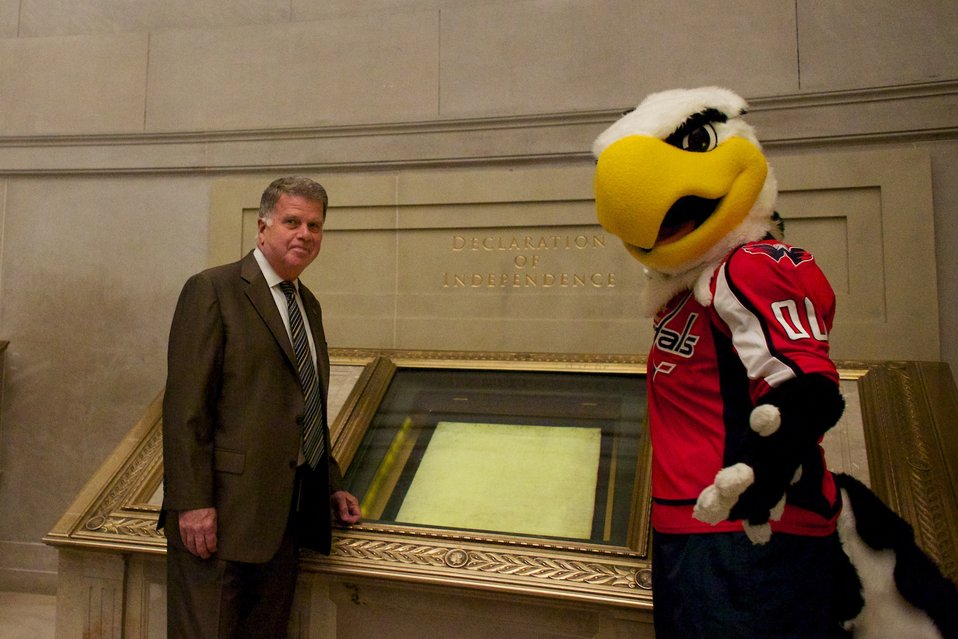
Washington Capitals mascot Slapshot visits the National Archives